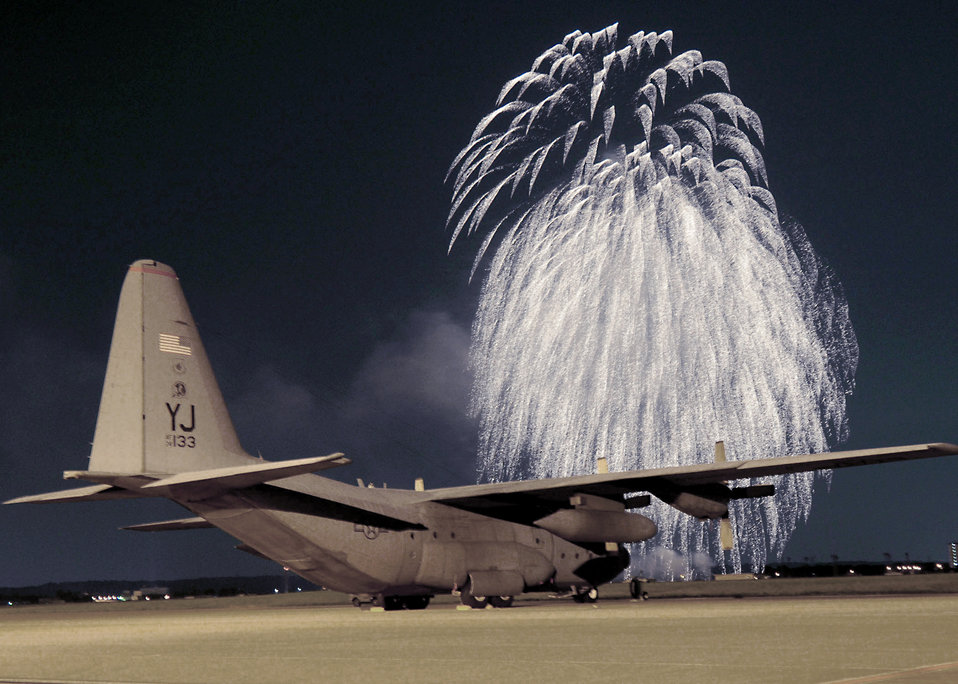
Fireworks light up the night...

Fireworks erupt in front of a C-130 Hercules on the flightline at Yokota Air Base, Japan, at the Independence Day festivities in 2009. The 374th Force Support Squadron provided events for Yokota residents and their guest of all ages.